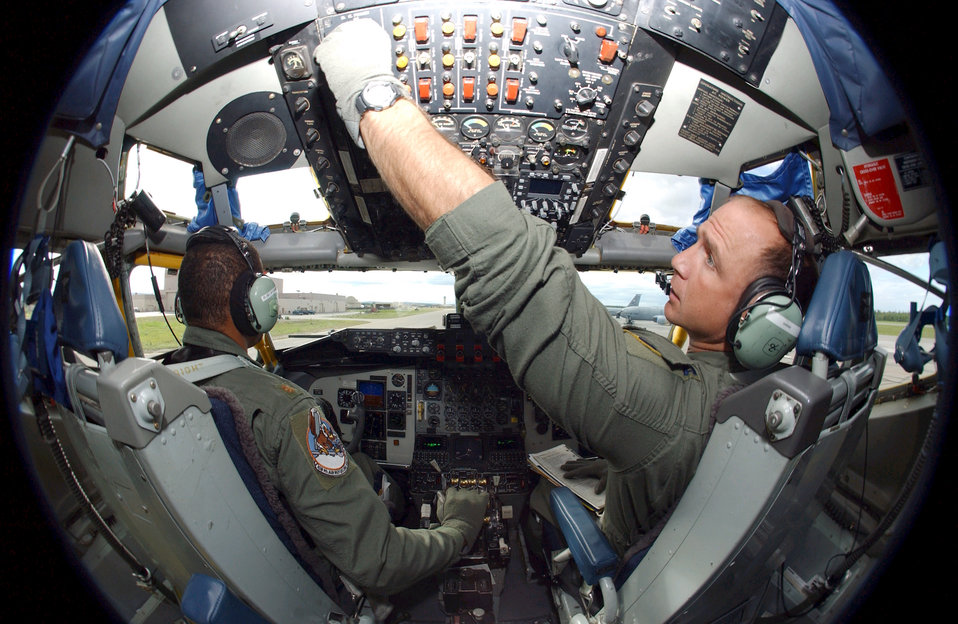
Gas pump in the sky

EIELSON AIR FORCE BASE, Alaska -- Capt. Nick Babiak (right), co-pilot, checks the controls as Maj. Ralph DeLatour, aircraft commander, taxis a KC-135 Stratotanker on June 11 during Northern Edge '04. The exercise is Alaska Command's joint training exercise designed to enhance interoperability among the services.